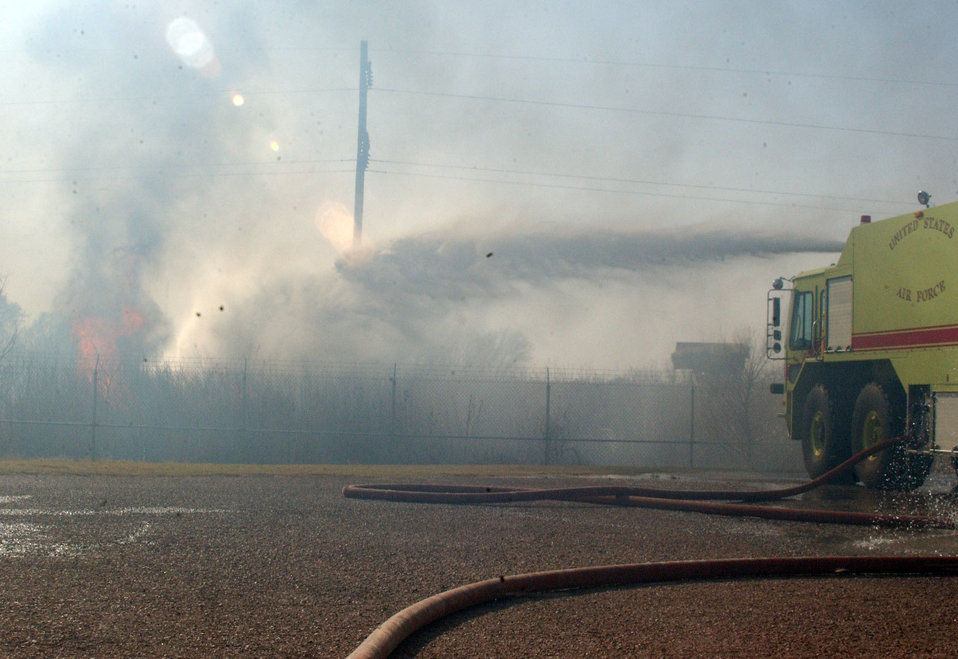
Altus fire

Firefighters from Altus Air Force Base, Okla., battle a blaze outside the base's south entrance gate Sunday, March 12. The fire eventually made its way on base. No injuries were reported.